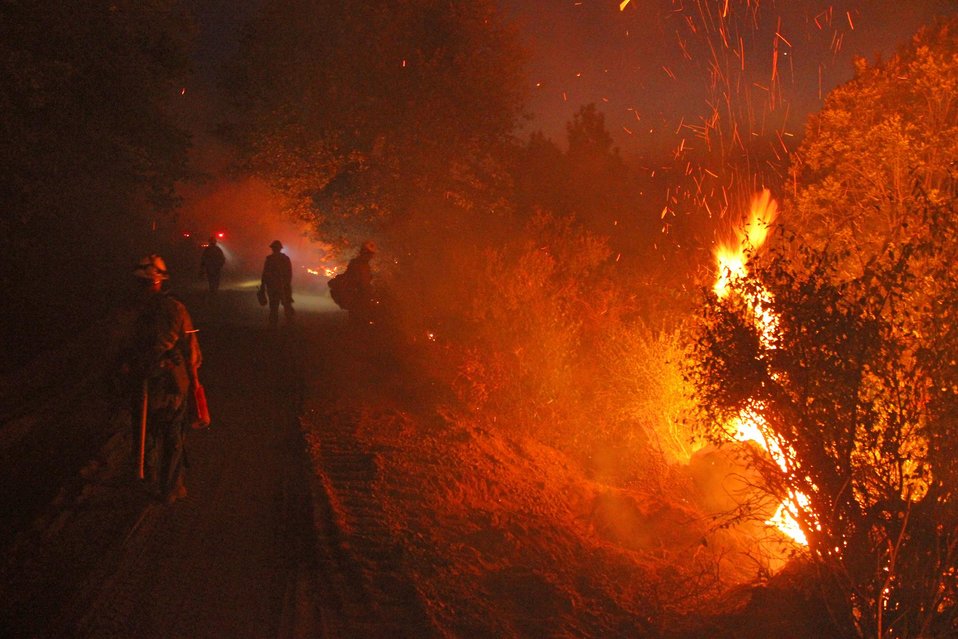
The Monterey Hotshots hold the fire line at night against the Rim Fire. The Rim Fire in the Stanislaus National Forest near in California began on Aug. 17, 2013 and is under investigation. The fire has consumed approximately 199,237 acres and is 32% contained.